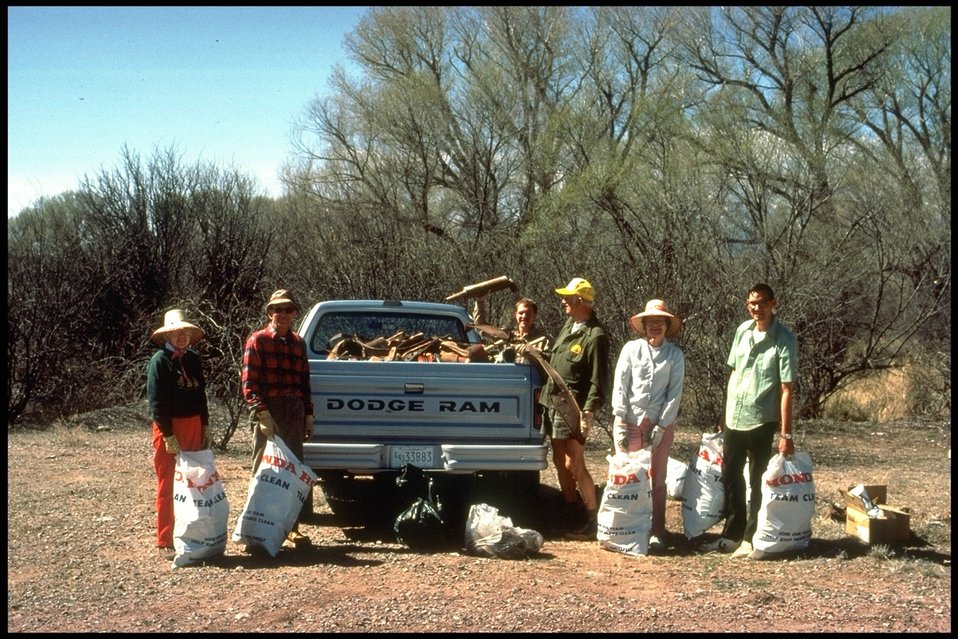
BLM employees help clean up our public lands in Arizona.